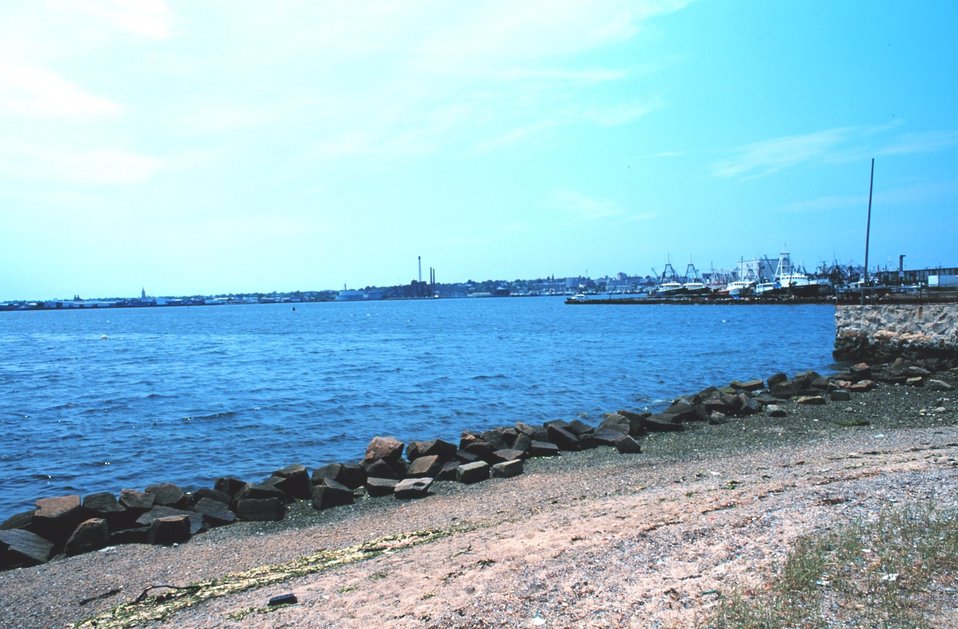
A view of New Bedford Harbor.